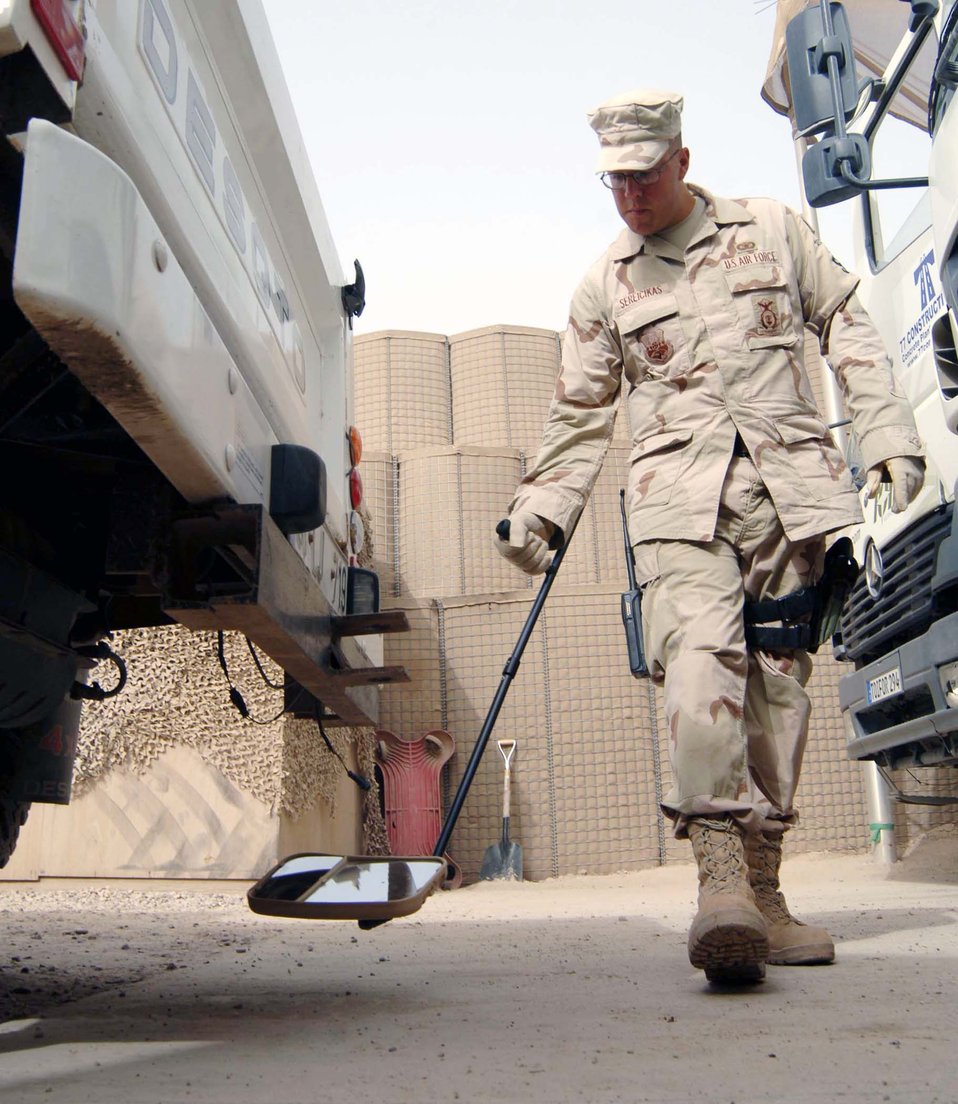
Security forces Airmen protect Sather Air Base

Senior Airman Felix Sereicikas searches for suspicious items in the undercarriage of a truck at the sierra-three search pit at Sather Air Base, Iraq. The security forces Airmen assigned there process more than 600 vehicles and 2,000 people weekly. Airman Sereicikas is assigned to the 447th Expeditionary Security Forces Squadron.